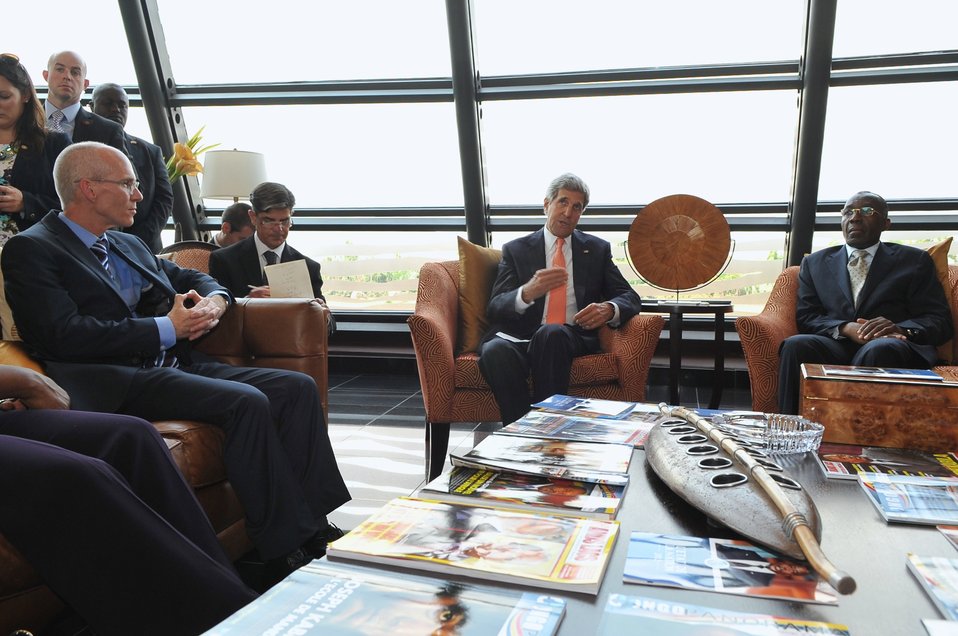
Ambassador Swan Listens As Secretary Kerry Addresses Reporters in Kinshasa

U.S. Ambassador to the Democratic Republic of Congo James Swan, left, and DRC Foreign Minister Raymond Tshibanda, right, listen as U.S. Secretary of State John Kerry addresses reporters after his arrival in Kinshasa on May 3, 2014.